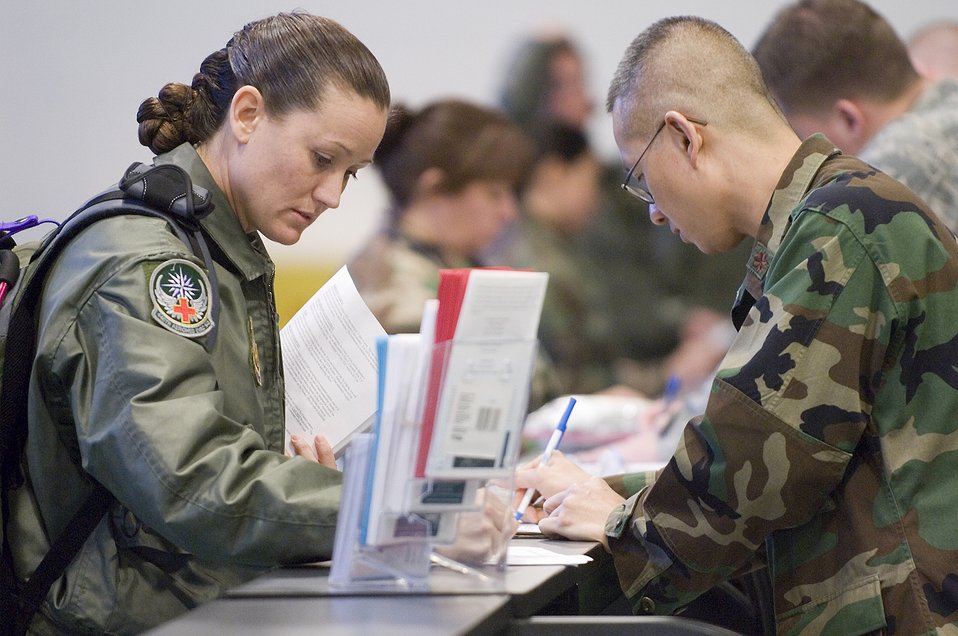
McChord Airmen provide lifeline in Pacific

Tech. Sgt. Kristy Wellman (left) goes over paperwork on the deployment processing line Jan. 25 at McChord Air Force Base, Wash. Sergeant Wellman of the 446th Aeromedical Evacuation Squadron and more than 140 other reservists from the 446th Airlift Wing are participating in Pacific Lifeline in Hawaii Jan. 26 through Feb. 9. Pacific Lifeline is a total force exercise designed to exercise the military's ability to rapidly deploy a trained, equipped team anywhere in the Pacific in response to a humanitarian assistance or disaster scenario.